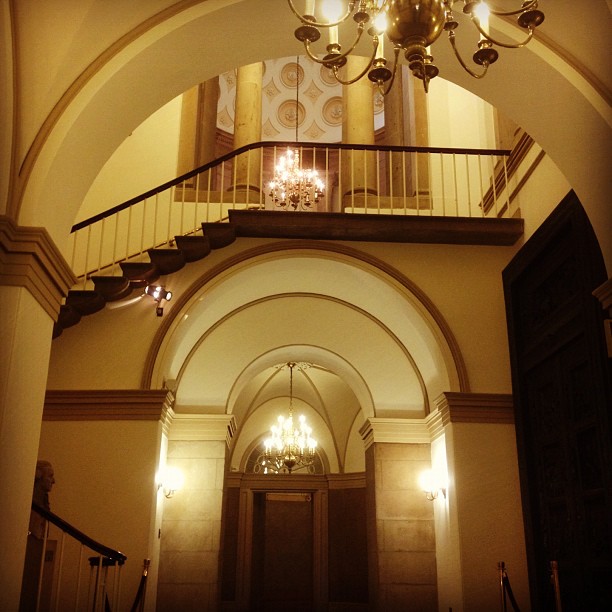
British burned Capitol 198 yrs ago this week; Small House Rotunda survived.